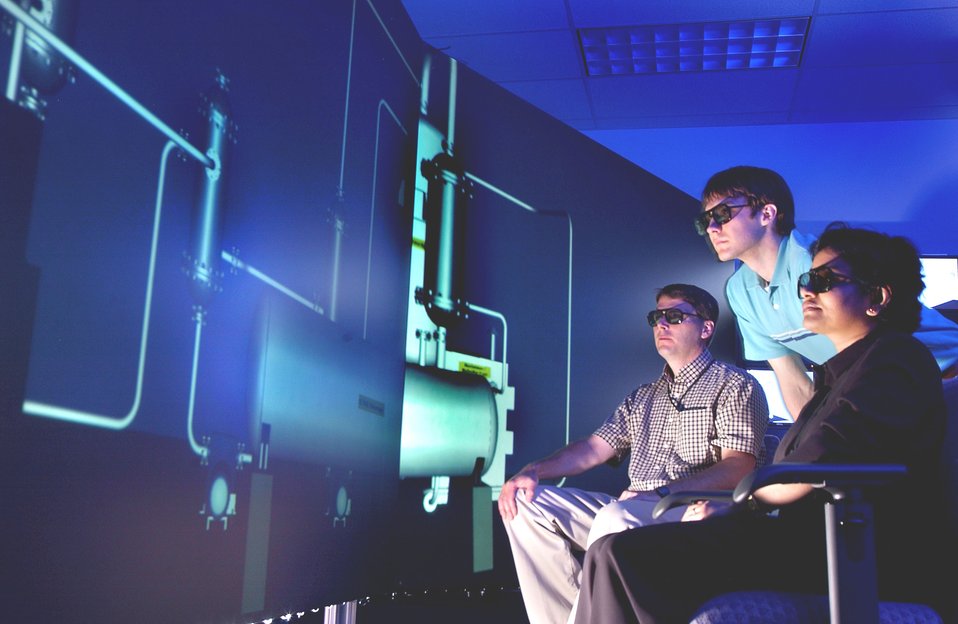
Members of the Visualization Research Group in the National Energy Technology Laboratory's Office of Science and Engineering Research develop capabilities to visualize data and advanced power generation systems. Scientist studies a visualization of a power plant component.